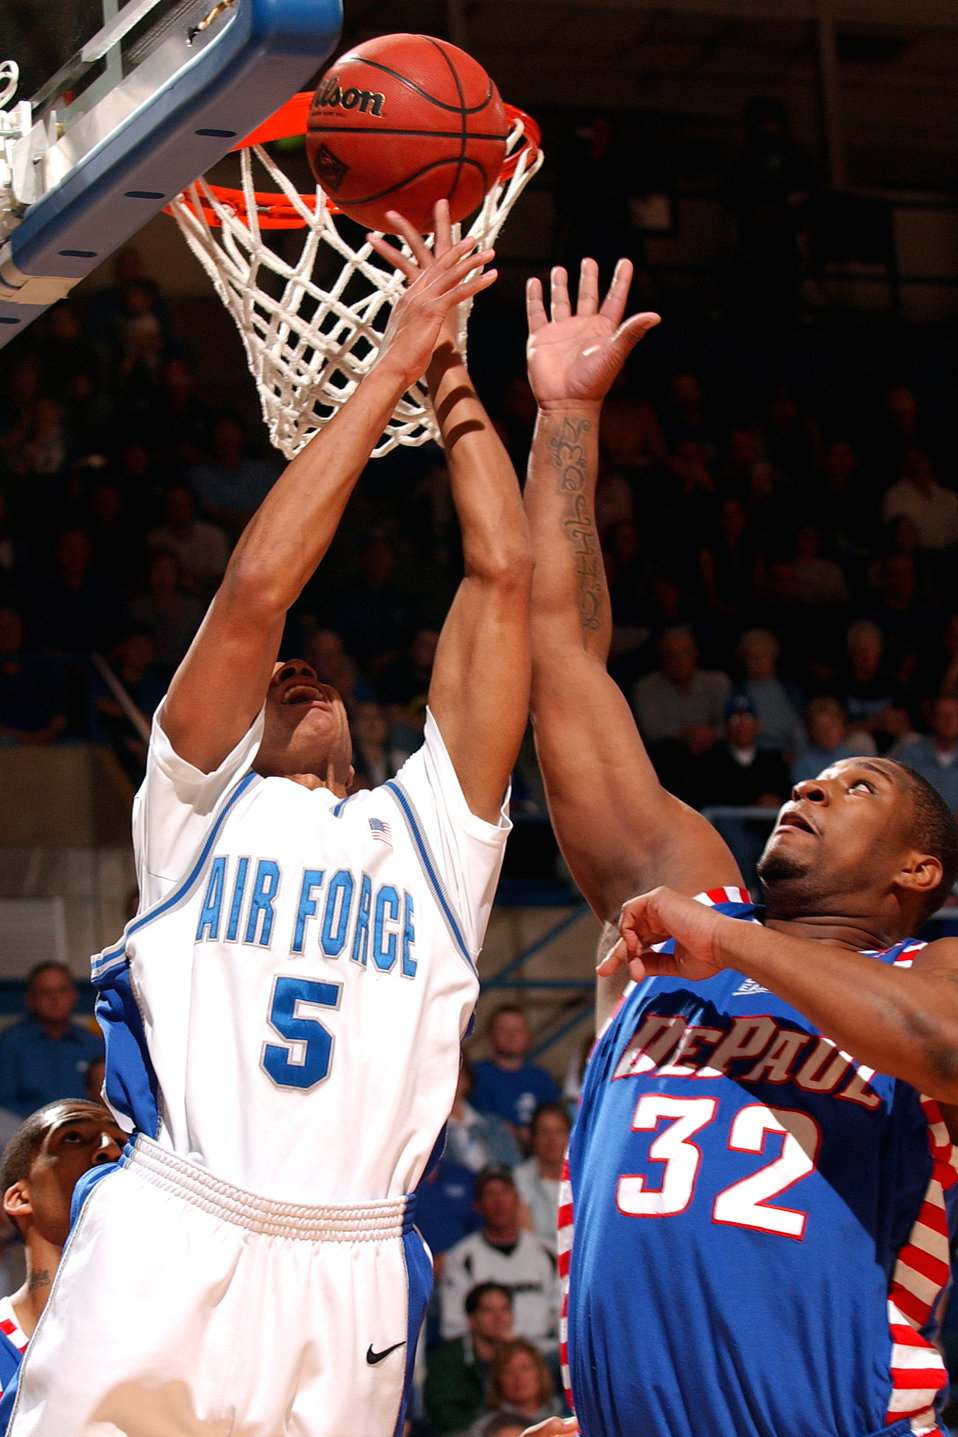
Falcons reach NIT final four in NYC

Falcon guard Matt McCraw battles DePaul center Lorenzo Thompson for a rebound March 21 at Clune Arena. McCraw and Jacob Burtschi each had a team high eight rebounds in Air Force's 52-51 win giving the bluesuiters a berth in the NIT semifinals in New York City's Madison Square Garden March 27 against Clemson.